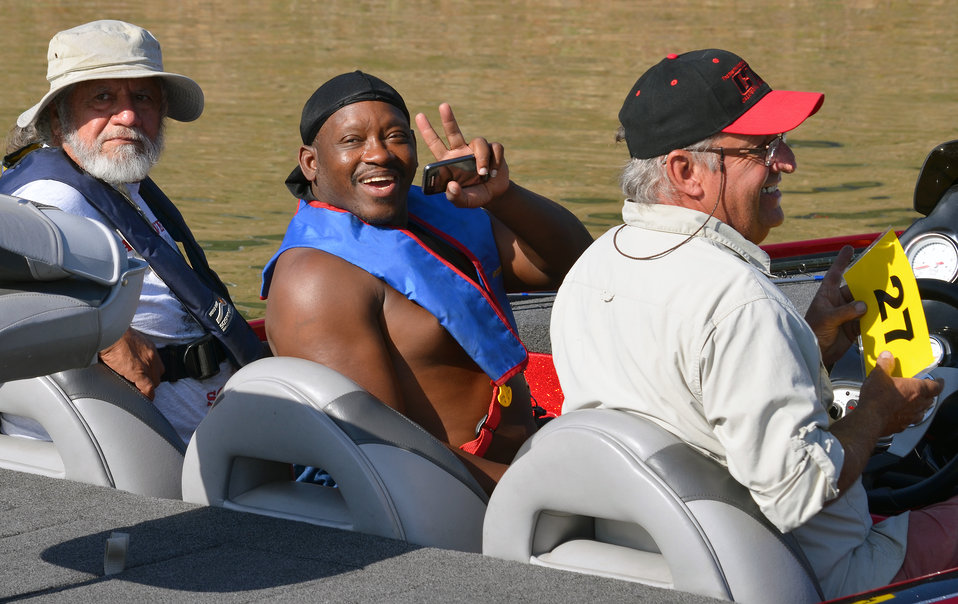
Take a Warrior Fishing 2014 at Pine Flat Lake

Lots of new fishing friendships were made this past weekend. Pine Flat Lake, the U.S. Army Corps of Engineers Sacramento District park near Piedra, Calif., hosted Take a Warrior Fishing on May 3, 2014. The recreational event sponsored by Central Valley Veterans and their corporate donors, plus bright sunshine and good fishing, attracted 68 veterans and their families. A team of over 100 volunteers made sure veterans and their families enjoyed a day of fishing, fun and food.